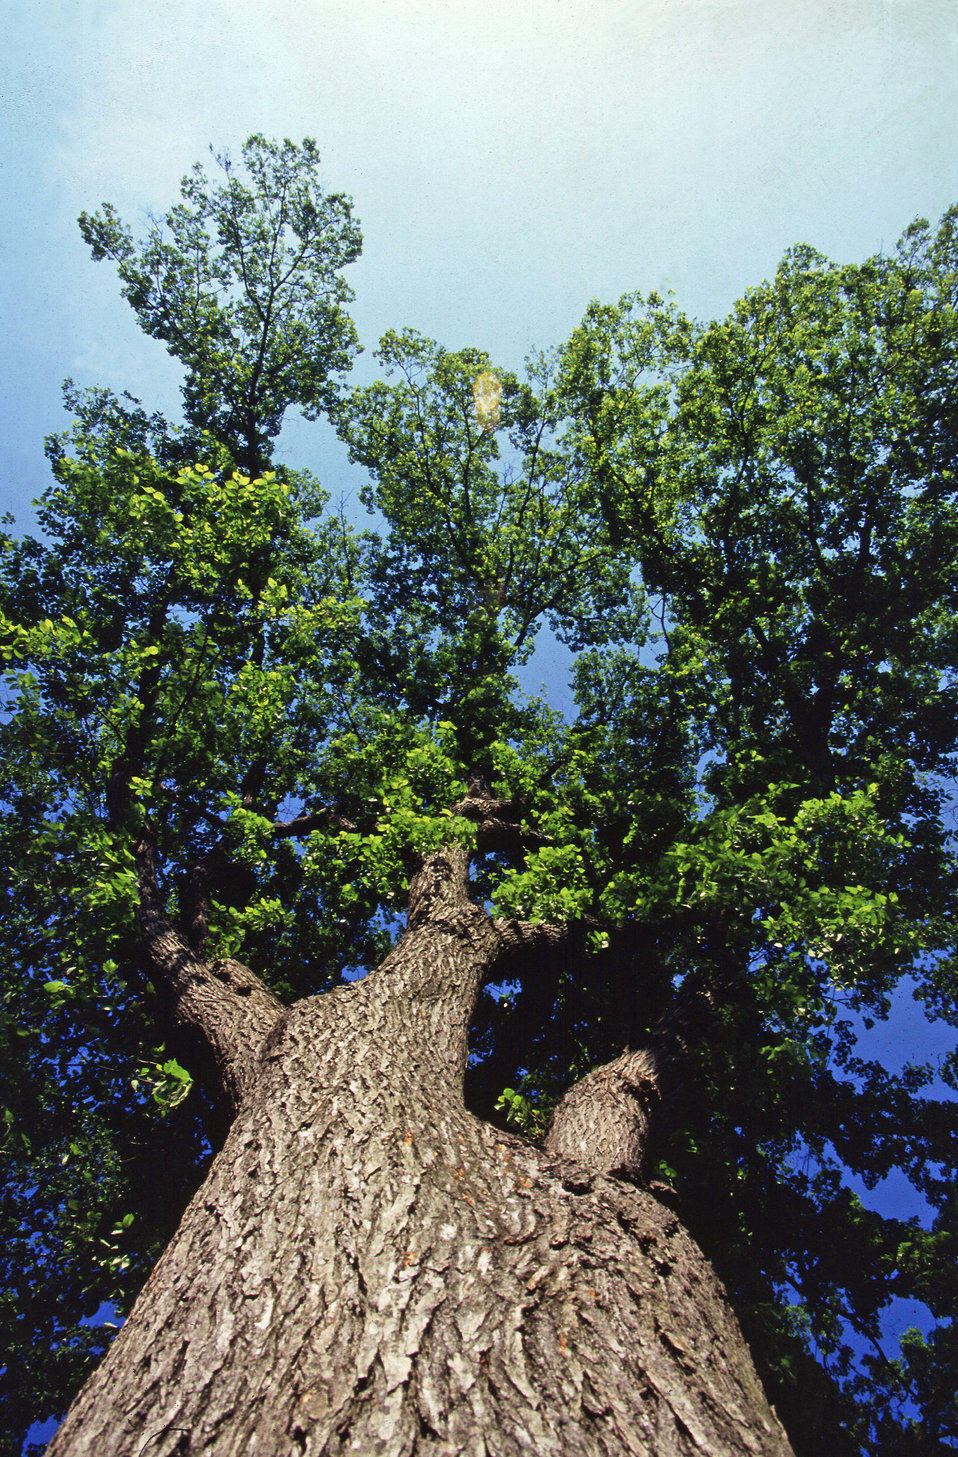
Shanksville Mug-a

Looking up at the canopy of an American elm Tree.